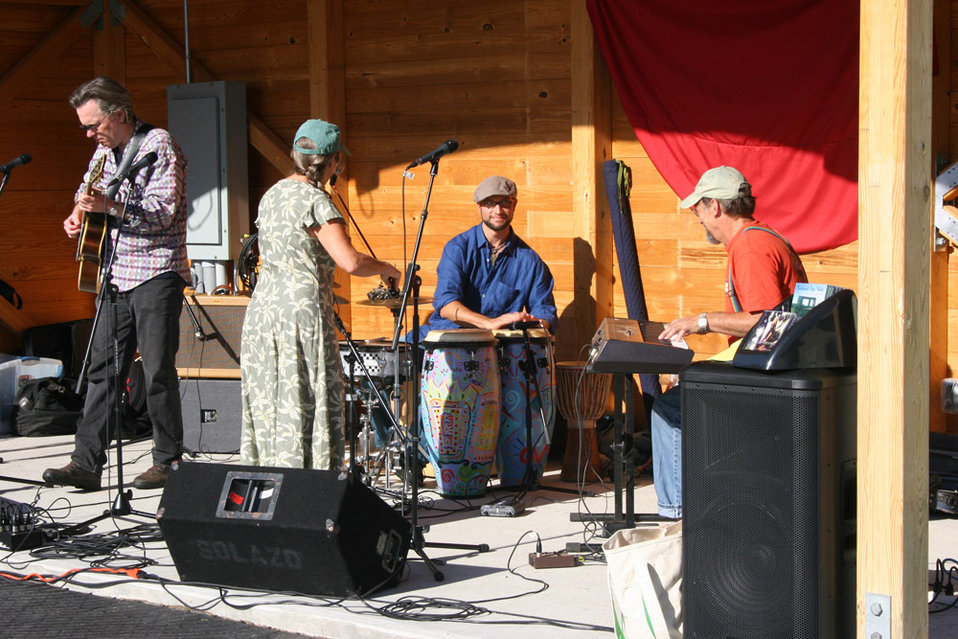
Freshwater Folk Festival (8)